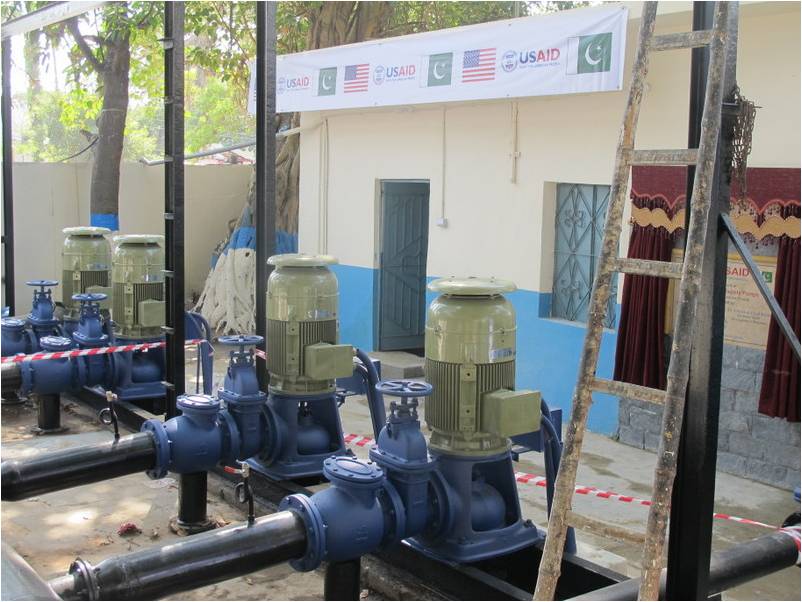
The facility is now equipped with modern equipment